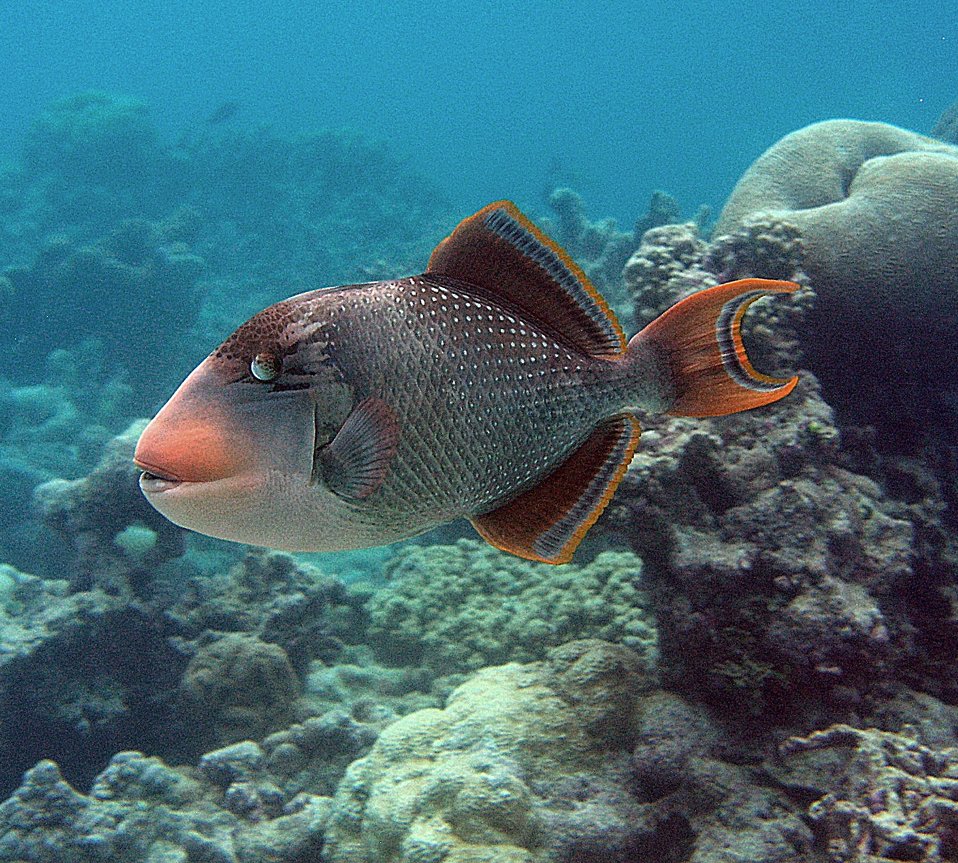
Yellow-margin triggerfish at Palmyra Atoll NWR

At Palmyra Atoll National Wildlife Refuge in the Pacific, a yellow-margin triggerfish patrols the water.